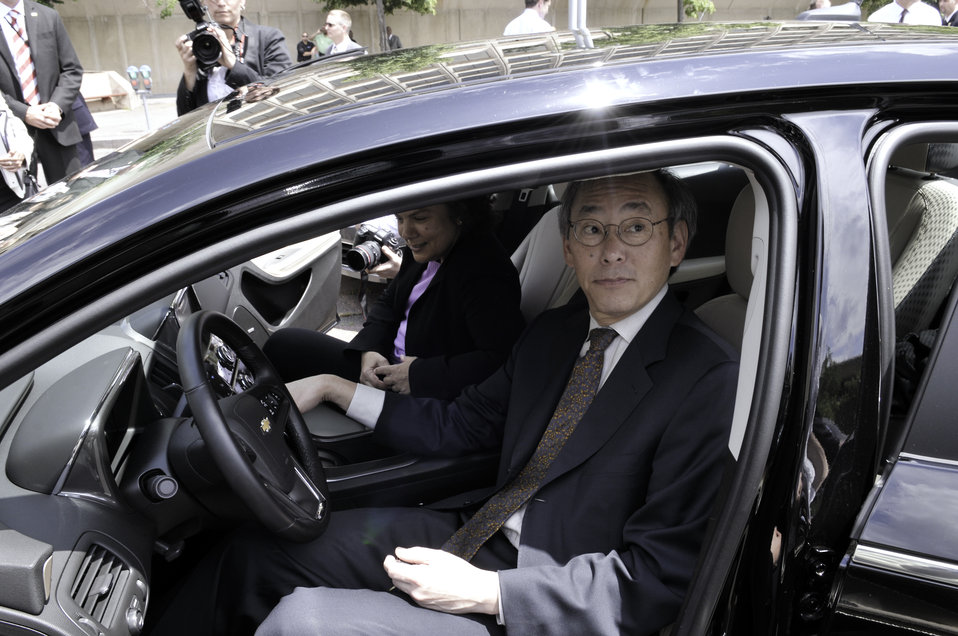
Clean Fleets Announcement 11 of 14

Sec. Steven Chu, US Department of Energy, and Nancy Sutley, White House Council on Environmental Council Chairwoman, try out a new Chevy Volt purchased by the Department of Energy.